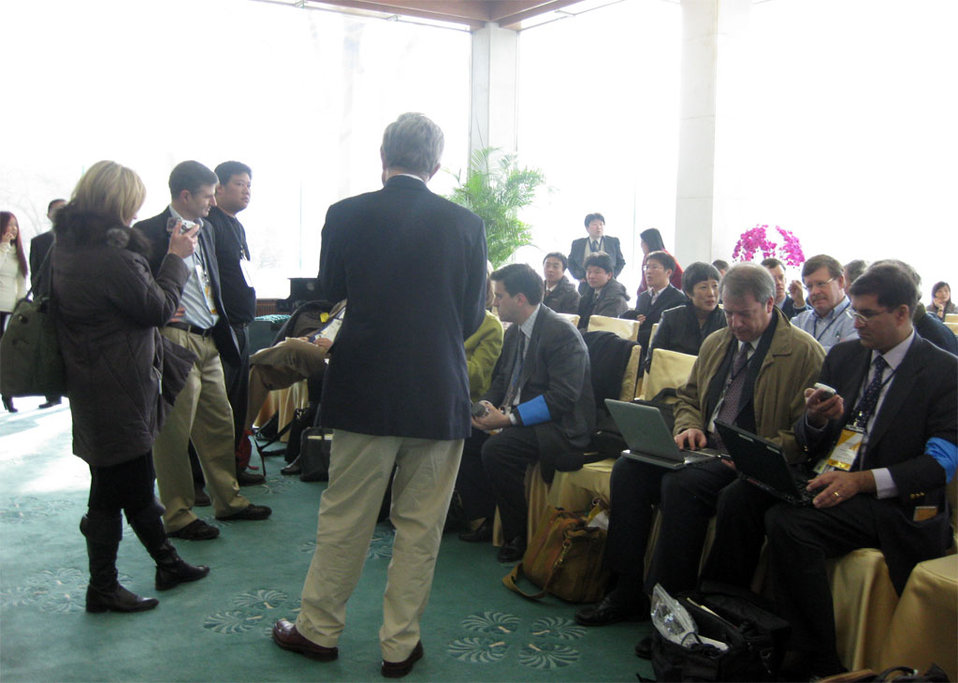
Press at Diaoyutai State Guesthouse

Behind the Scenes: Members of the media prepare prior to a press conference by U.S. Secretary of State Hillary Rodham Clinton at the Diaoyutai State Guesthouse in Beijing, China February 20, 2009.